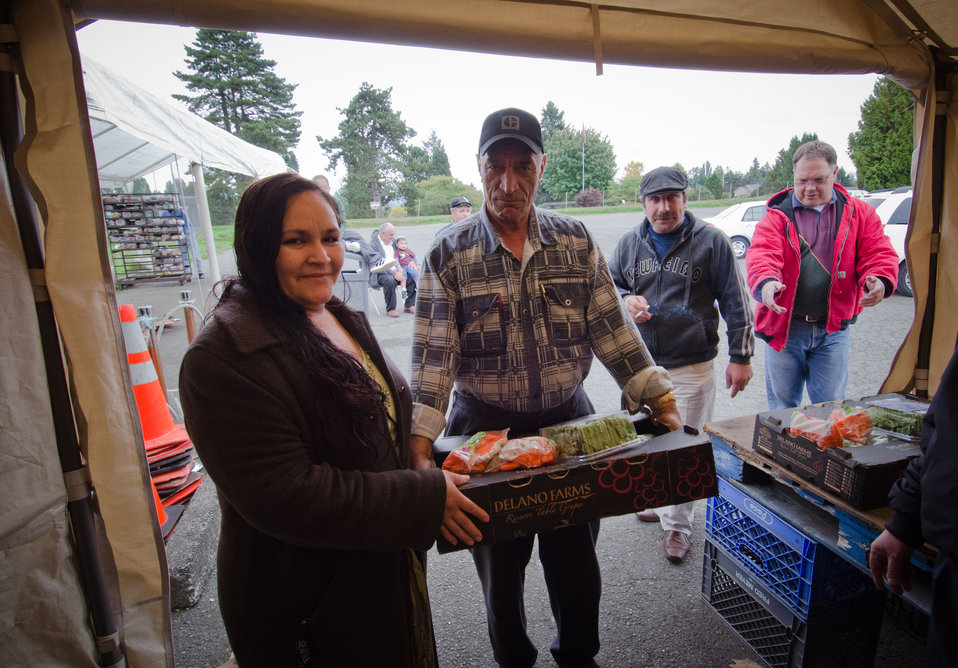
Amanda Arthur (left) is helped by Mekhredze Telman at the produce tent at Tukwila Pantry, Tukwila. WA, on Thursday, October 20, 2011. The pantry provides monthly food bank services to individuals and families in cities of Tukwila, SeaTac, Burien and the Boulevard Park community. Congregate meal service is held each Tuesday at their location in the Riverton Park United Methodist Church. The church provides some funds, several large rooms, and outdoor operating space for the pantry’s food distribution, shipping container storage units, trailer, tents, shelters and refrigeration truck. The pantry's weekly Tuesday’s Table provides 150 hot meals to seniors, low-income families, homeless individuals and those in transition. Additionally, emergency referral services are provided to assist individuals connecting with agencies that can address their needs. Executive Director Joe Tice grew up in Tukwila and feels compelled to give back to economically challenged community of 25,000 families in 3,000 households. “Since the pantry’s founding in 2000, census figures show poverty has risen 300%,” said Joe Tice. “85-95% of elementary school children are enrolled in SNAP (U.S. Department of Agriculture Supplemental Nutrition Assistance Program).” At the pantry’s height, it delivered 3.8 million pounds of food (2009), but with the economic downturn Tice projects 2011 deliveries to total 2.6 million pounds. Tice, considers Tukwila Pantry as one of the smaller distribution points in the greater Seattle area. Some canned and dry goods are provided by
The Emergency Food Assistance Program (TEFAP) a Federal program that helps supplement the diets of low-income needy persons, including elderly people, by providing them with emergency food and nutrition assistance. A significant amount of the pantry’s food comes through Northwest Harvest, Washington's only nonprofit statewide food bank distributor; and Food Lifeline, the largest nonprofit food distributor in the state who solicit, receive, and distribute over 24 million meals of food to nearly 700,000 people through our network of 300 food banks (such as Tukwila Pantry), shelters and meal programs.